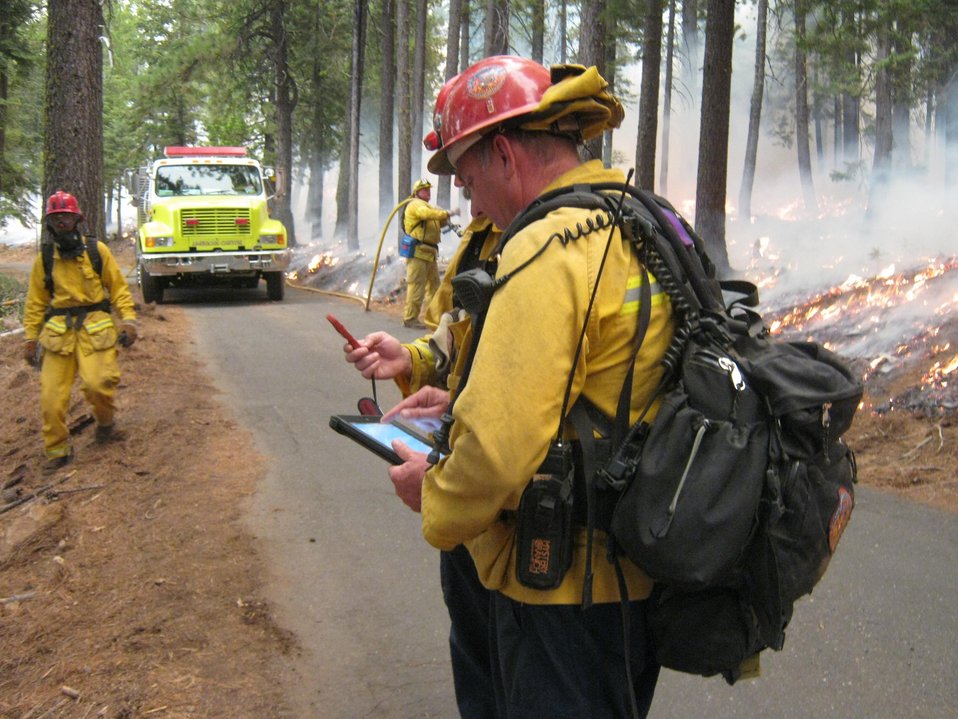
Long-term fire behavior analyst checks fire weather on an iPad at the Rim Fire. The Rim Fire in the Stanislaus National Forest near in California began on Aug. 17, 2013 and is under investigation. The fire has consumed approximately 235,841 acres and is 70% contained.